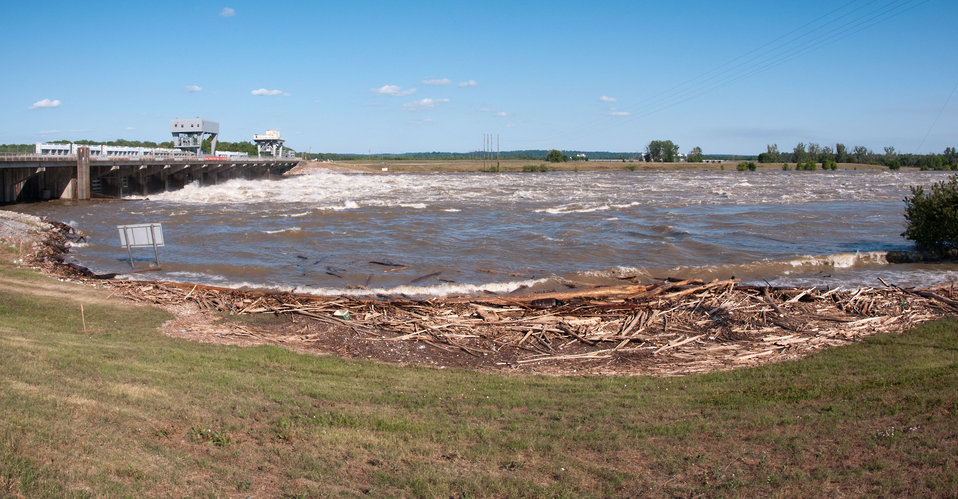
The Army Corps of Engineers conduct daily depth measurements along the intake side of The Old River Control Complex, Low Sill Structure in Concordia Parish, LA, on Tuesday, May 17, 2011. The measurements tell both the condition along the intake “ramp” and allow them to calculate the flow through the gates. The Old River Control Complex is designed to channel as much as 30 percent of the Mississippi River’s flow into the Gulf of Mexico through it’s eleven 44-foot wide gates across 566 foot span that separates the Mississippi and (the outflow channel to the) Red and Atchafalaya Rivers. Rated at 300,000 million gallons per minute (note: That’s more than seven Olympic sized swimming pools every second). Although this helps the Mississippi River, it (along with other concerns, puts back pressure on the Red River and other waterways, possibly causing some flooding of farms to avoid a catastrophic breech of the levee system. Most of the gates have been opened by a rolling crane and stored in racks. Debris, some as larger than telephone polls make their way through the gates and pool in eddies. The constant motion and contact with other objects, strip trees of their branches and bark. 20-30 pound Carp can frequently be seen jumping out of the white water.